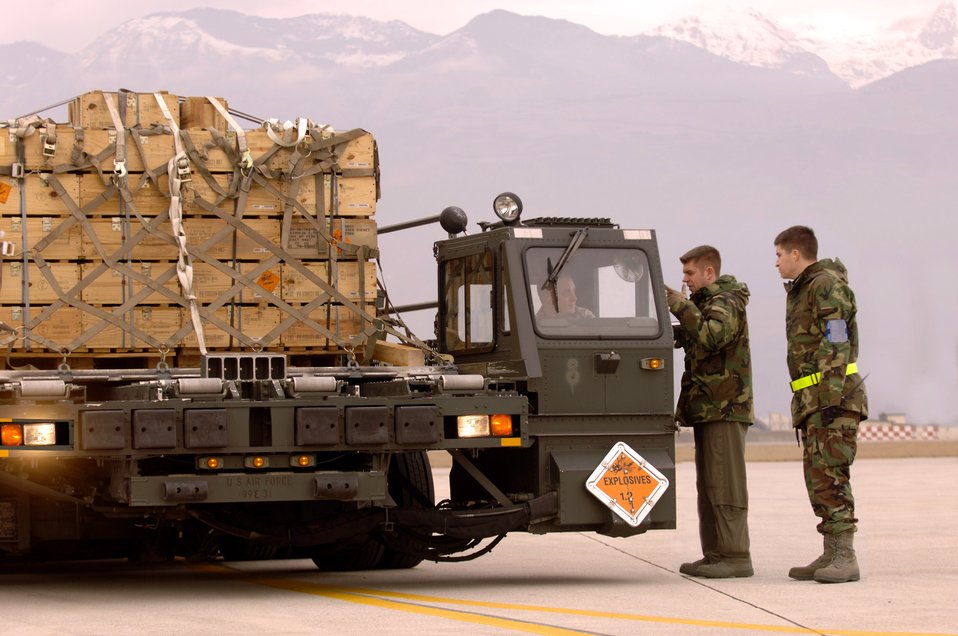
Total force provides seamless airlift support

Tech. Sgt. Kyle Gurnon discusses the upload of munitions with Senior Airman Joseph Gingo that will be transported Jan. 9 from Aviano Air Base, Italy, to Zaragoza, Spain. Sergeant Gurnon is a C-130 Hercules loadmaster from the 143rd Airlift Wing at Quonset State Airport near Providence, Rhode Island.